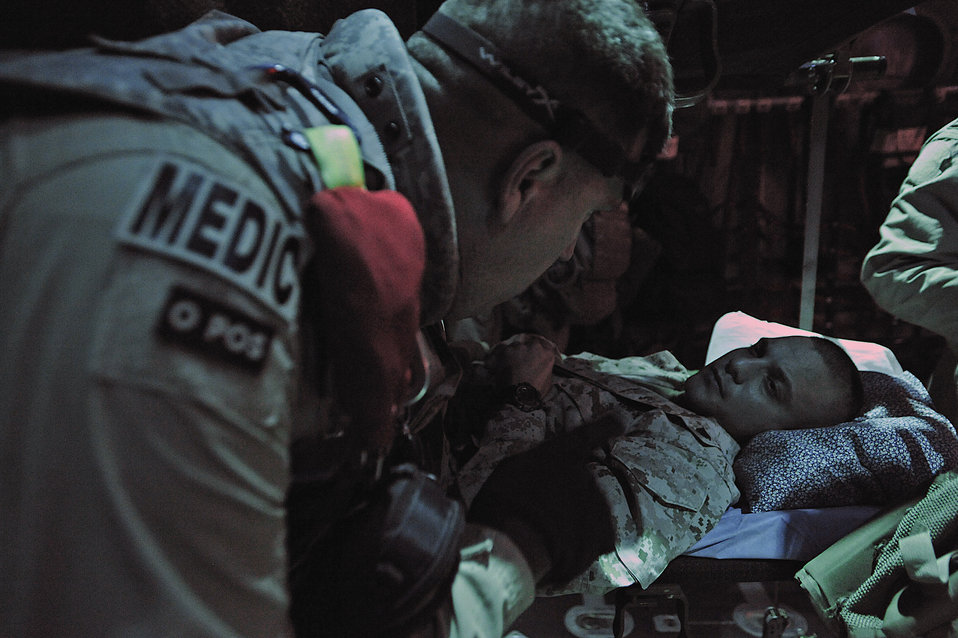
Iraqi doctors study American aeromedical evacuation program

Master Sgt. Scott Wilkes checks on Marine Lance Cpl. Geroge Diaz during an aeromedical evacuation mission over Iraq Nov. 7. Two Iraqi doctors from Iraq's Ministry of Defense accompanied the Air Force mission to study aeromedical evacuation procedures so that they can establish an aeromedical evacuation service for the Iraqi air force. Sergeant Wilkes, a medical technician with the 332nd Expeditionary Aeromedical Evacuation Flight, is deployed from McGuire Air Force Base, N.J.